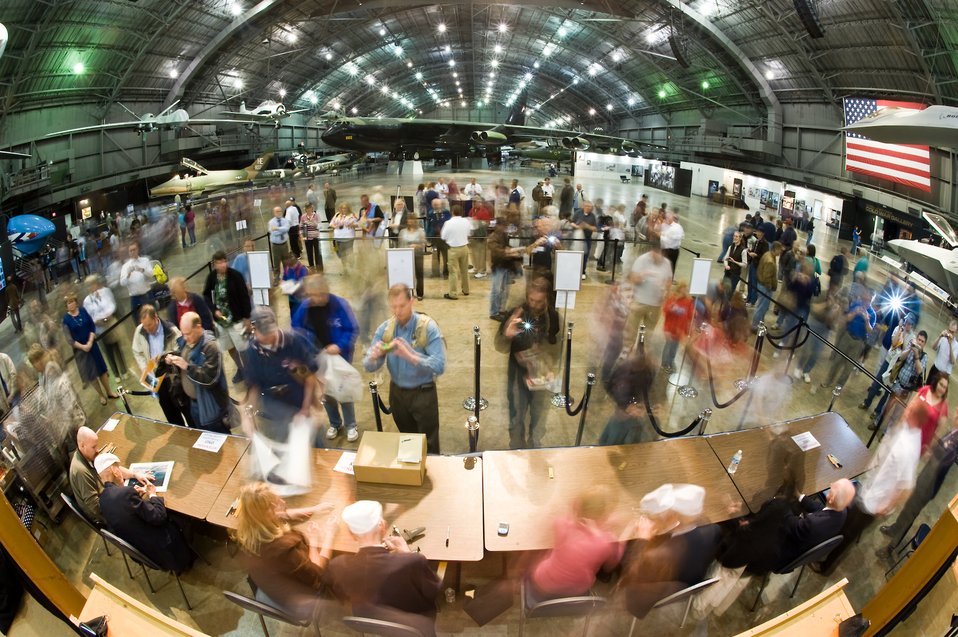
68th Reunion of Doolittle Raiders

Doolittle Raiders drew thousands of visitors to their autograph sessions at the National Museum of the U.S. Air Force at Wright-Patterson Air Force Base, Ohio on April 18, 2010. To ensure people were easily able to meet all the Raiders, groups (standing at tables) were brought in one a time to give people an easier time to meet all the Raiders. The main body of fans was waiting out of sight in lines that extended through corridors and down adjacent galleries the size of this Modern Era hanger. People waited in an orderly line for hours with books, posters, photos, and model airplanes that they asked the Doolittle Raiders to sign.